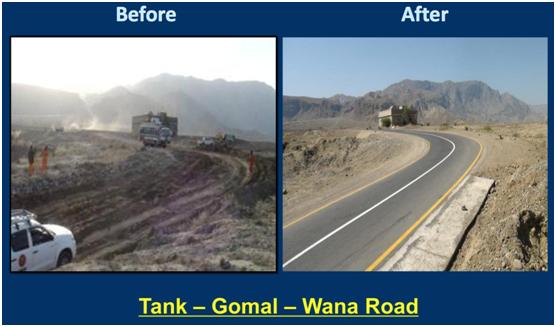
Tank- Gomal- Wana Road.

Before and After of Tank- Gomal- Wana Road.